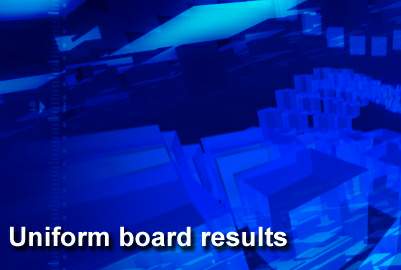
Air Force officials release uniform board results, focus on current inventory

Air Force officials here have released the results of the 98th Virtual Uniform Board. While the board did not introduce new uniforms, the majority of the uniform-wear policy results improved upon existing uniforms.